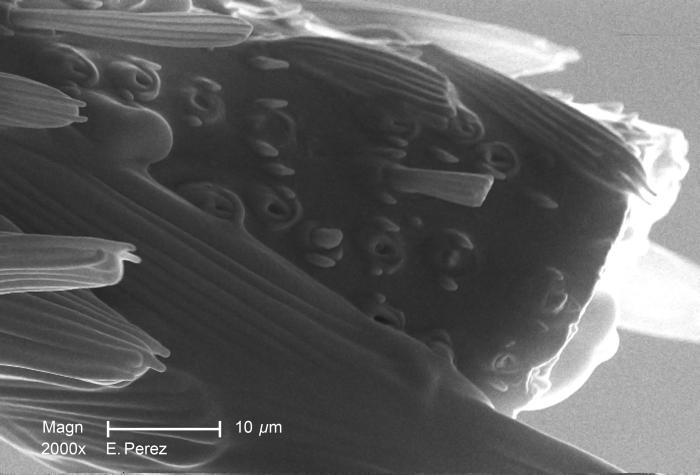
Under a relatively high magnification of 2000X, this scanning electron micrograph (SEM) depicted some of the exoskeletal details found at the distal-most tip of one of the legs of an unidentified mosquito discovered in the suburbs of Decatur, Georgia. The exoskeleton, or outer surface of this arthropod, affords it with support and mobility, as well as organs specialized in sensorial acquisition. In this particular view, you'll note a number of very small setae, or 'hairs', and scales that assist in both the act of flight, and thermoregulation of the insect's bodily temperature.